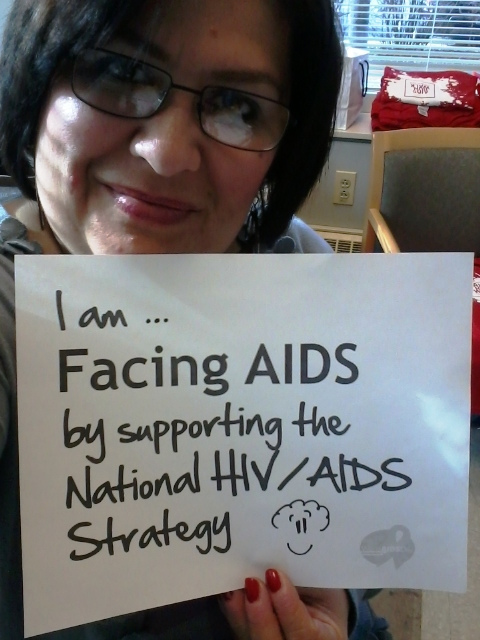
Woman Facing AIDS through supporting NHAS-47